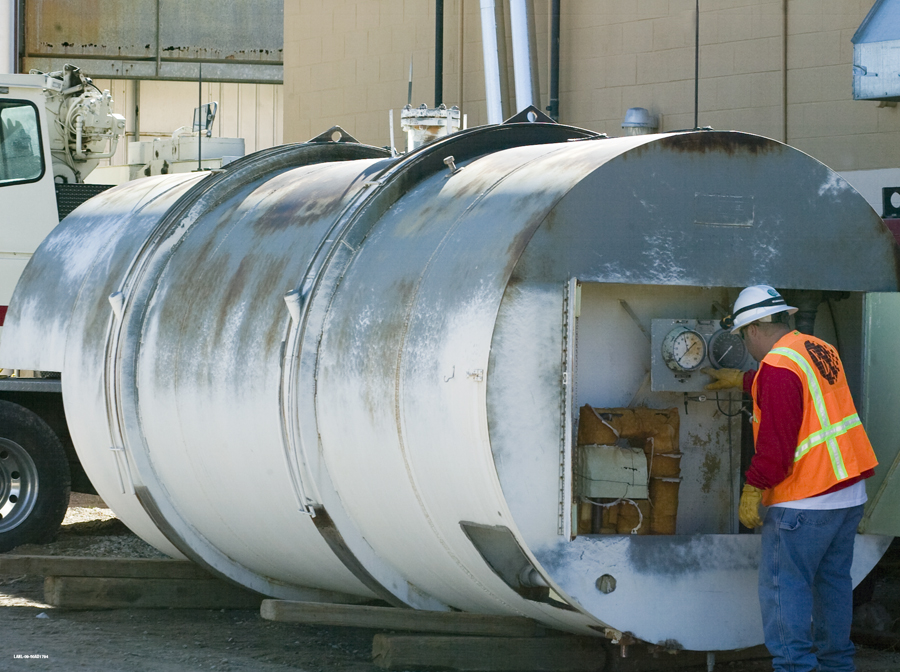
LANL - TSTA Equipment Removal

The metal from a nitrogen tank removed from the Tritium Systems Test Assembly facility will be recycled.